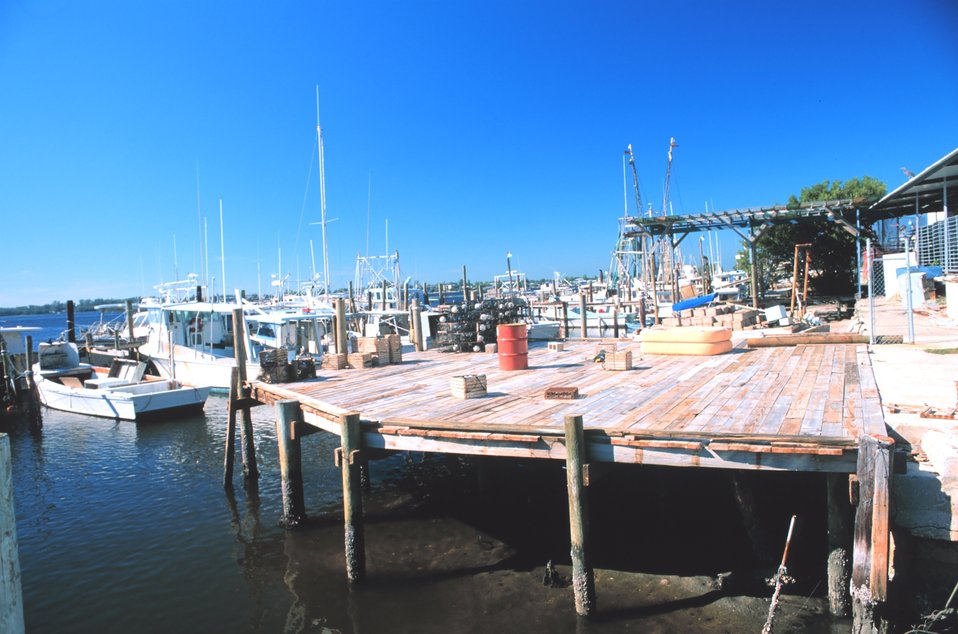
Shrimp, snapper, grouper, and stone crab fishing boats at A. P. Bell Fish Co.